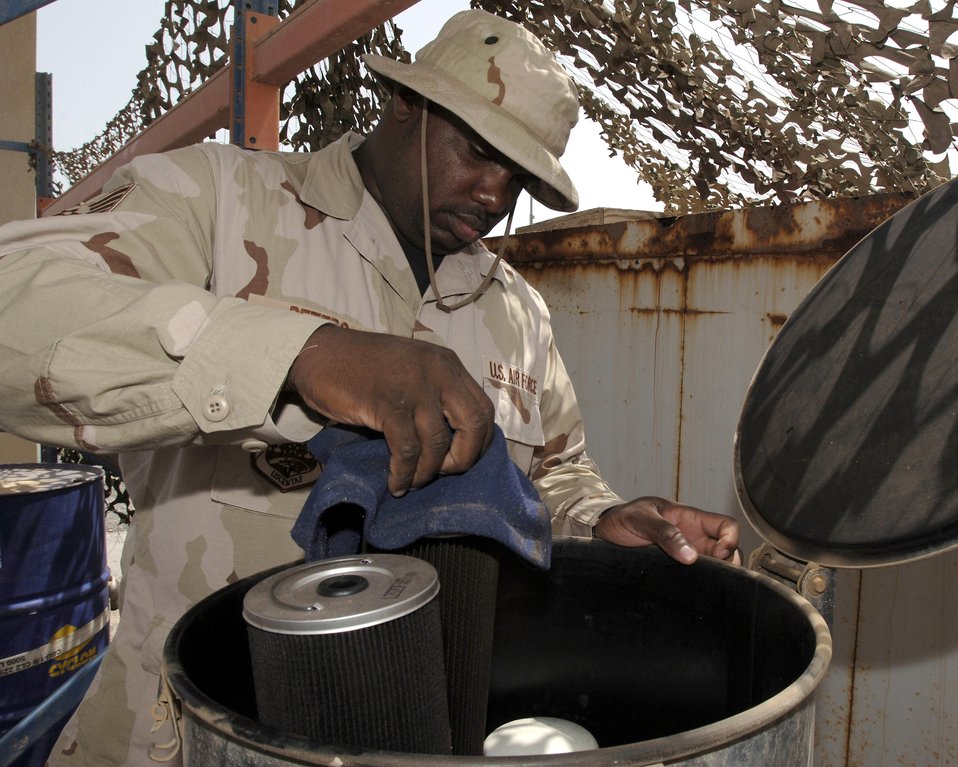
Airmen show 'can-do' spirit in joint-force environment

Staff Sgt. Harvey Peters prepares a 55-gallon drum of used engine oil April 12 for inspection at the hazardous waste collection point at Camp Patriot an undisclosed location in Southwest Asia. The collection point is the sole waste collection site for the Air Force, Army, Navy and Marines. Sergeant Peters is assigned to the 586th Expeditionary Mission Support Group's Civil Engineer Flight.